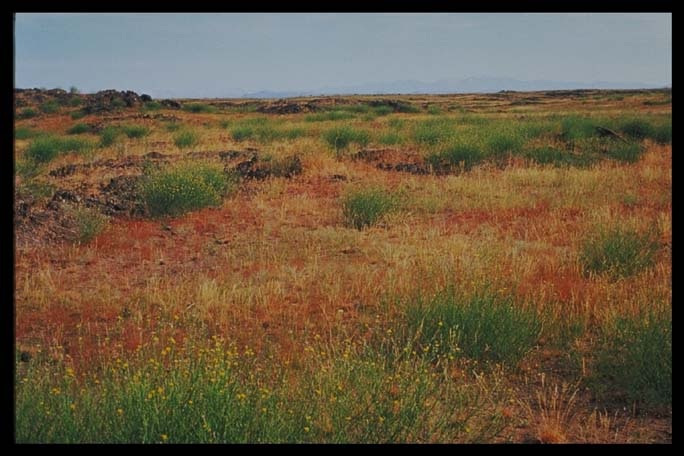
Landscape